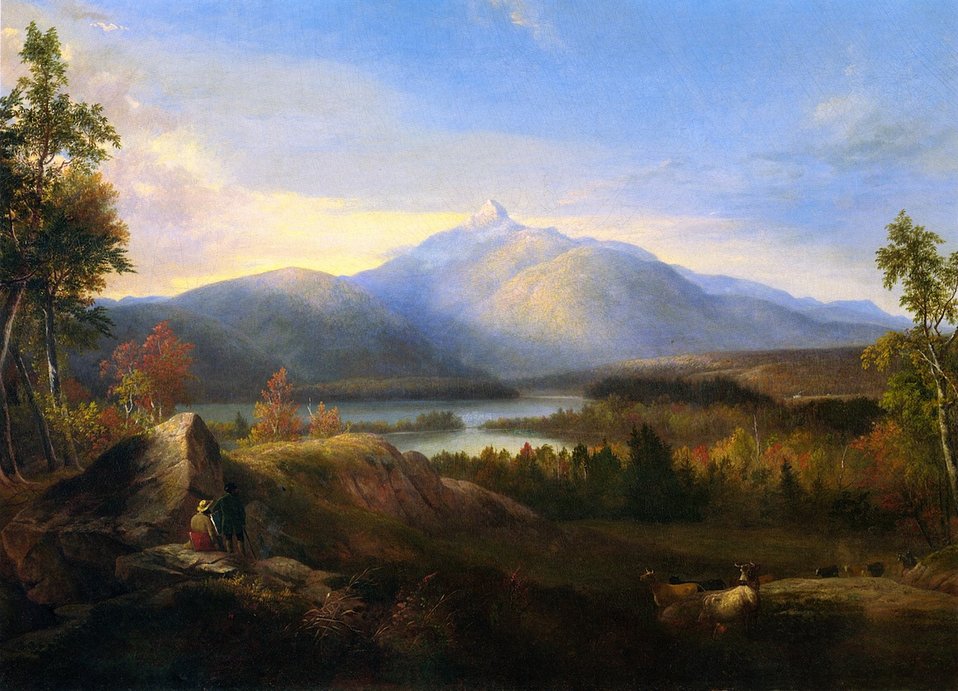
Alvan Fisher - Mount Chocorua